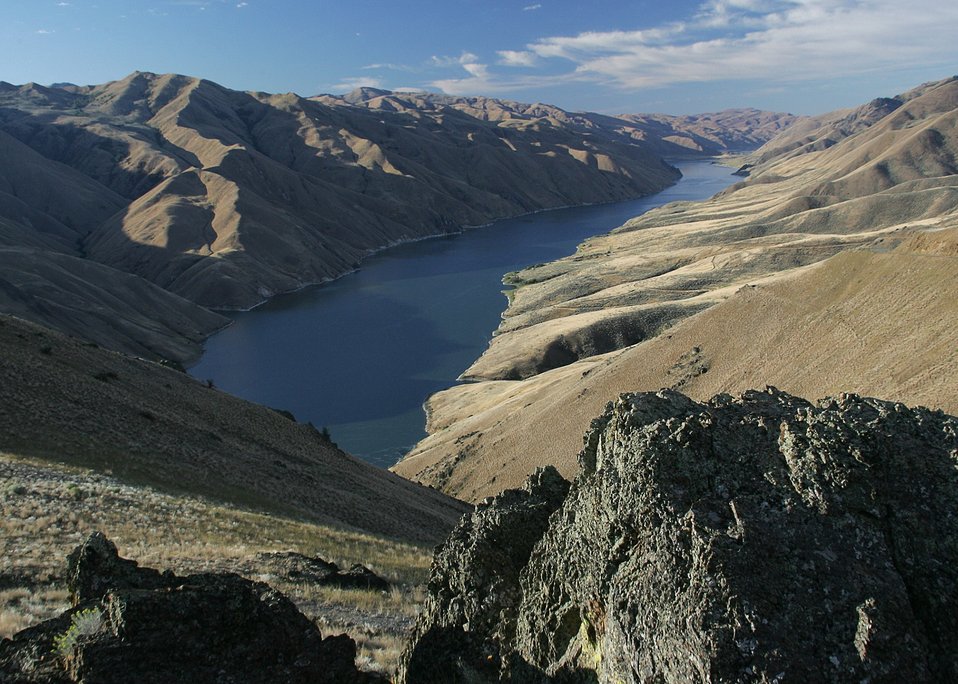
Sunrise on the Snake River Backcountry Byway.